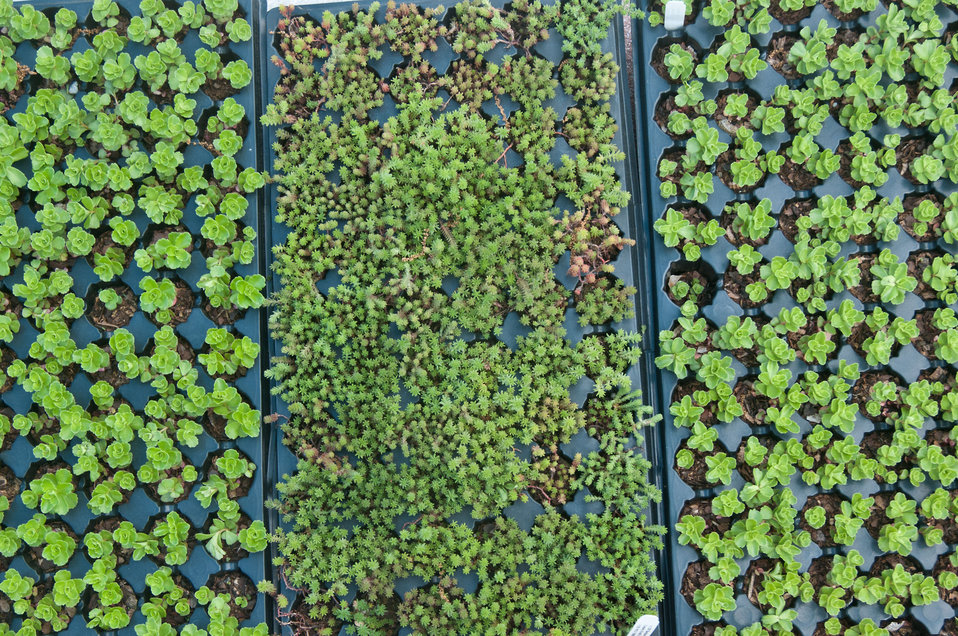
Rooftop vegetable garden is ready for planting at Bread for the City in Northwest Washington, DC, on Friday, April 29, 2011. The garden features specialized soil made of organic and inorganic material for rooftop gardens. The 30 wooden planters are about 4 inches tall but are not separate from the soil covering the roof, so there is a 10' depth to the plant in the boxes. Ground cover plants are already on site and await a team of volunteers to plant them in the walkways to retain moisture and help keep the soil temperature stable. This will be the largest of this kind in the Metro DC area. In addition to supplementing the fresh vegetable given to the community, it will also allow local residents to grown produce that is not normally marketed in this area.